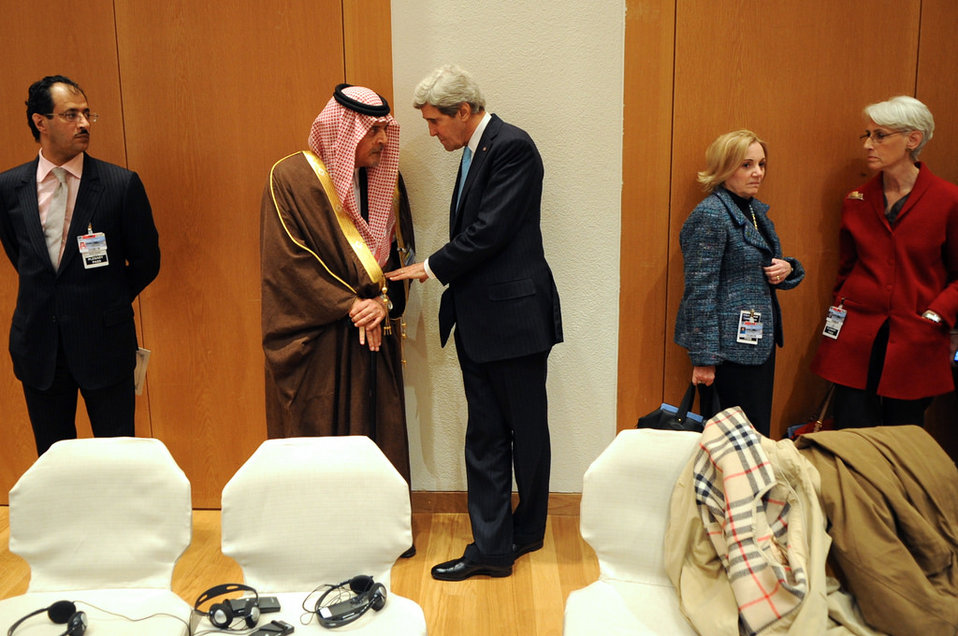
Secretary Kerry Speaks With Saudi Foreign Minister al-Faisal at Geneva II Conference

U.S. Secretary of State John Kerry holds a one-on-one chat with Saudi Foreign Minister Crown Prince Saud al-Faisal after the morning session of the Geneva II conference in Montreux, Switzerland, on January 22, 2014.